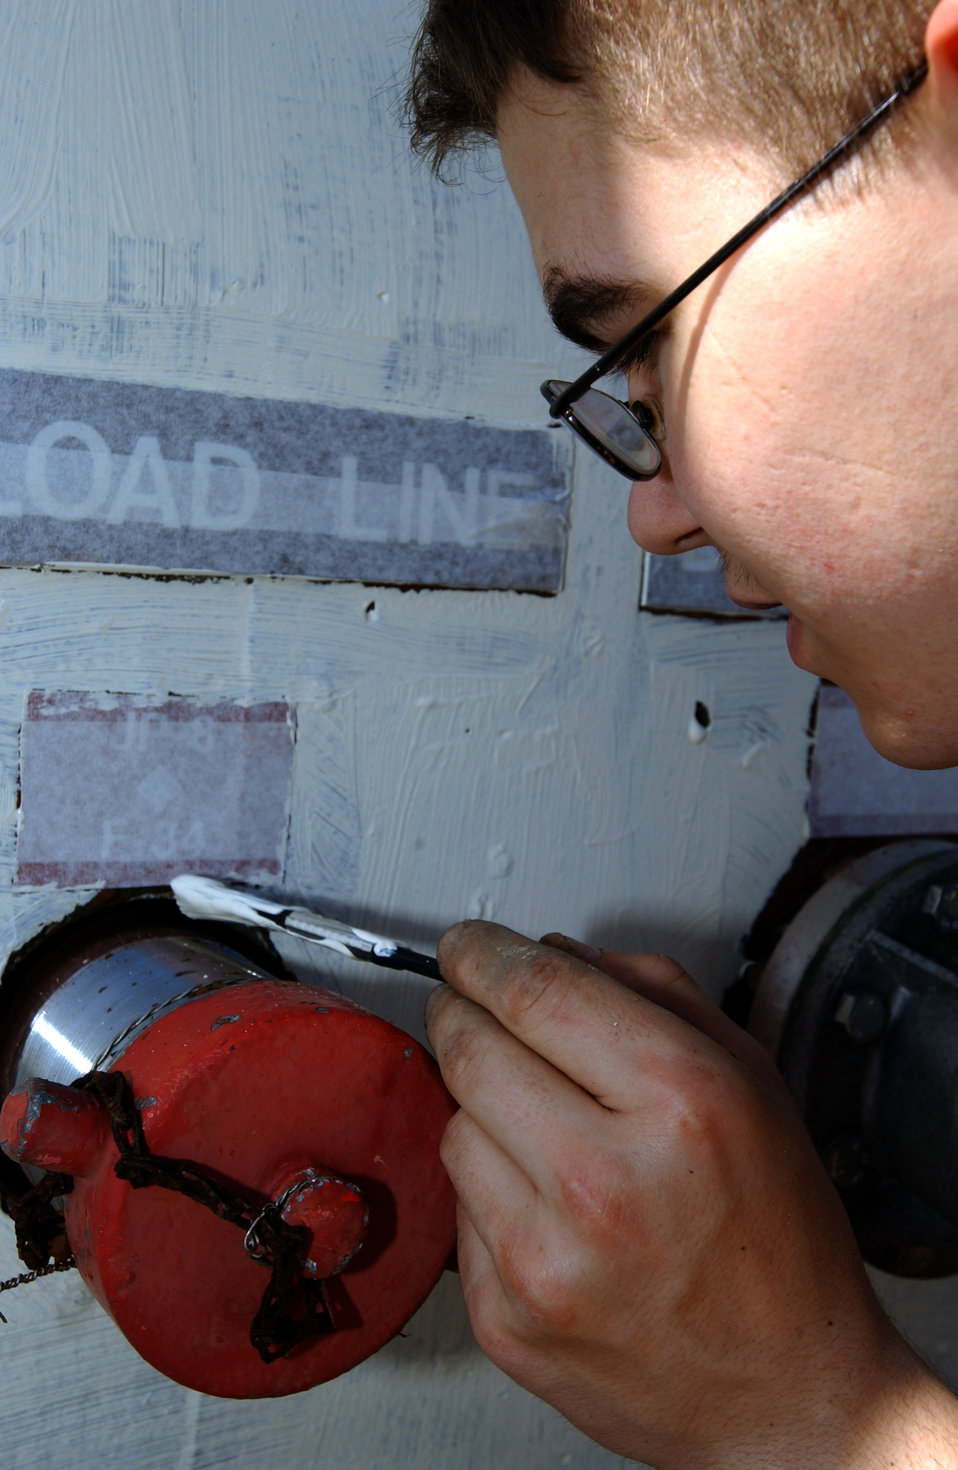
Repaint for pride

ROYAL AIR FORCE MILDENHALL, England -- Airman 1st Class James Day paints a fill station here April 23 during a base-wide cleanup. Airman Day is a member of the 100th Logistics Readiness Squadron. Airmen and civilians helped spruce up the base during a cleanup named, the Mother of All Spring Clean-ups, as part of a U.S. Air Forces in Europe-wide Combat Proud initiative. The goal was to help bring pride to servicemembers stationed in the command.